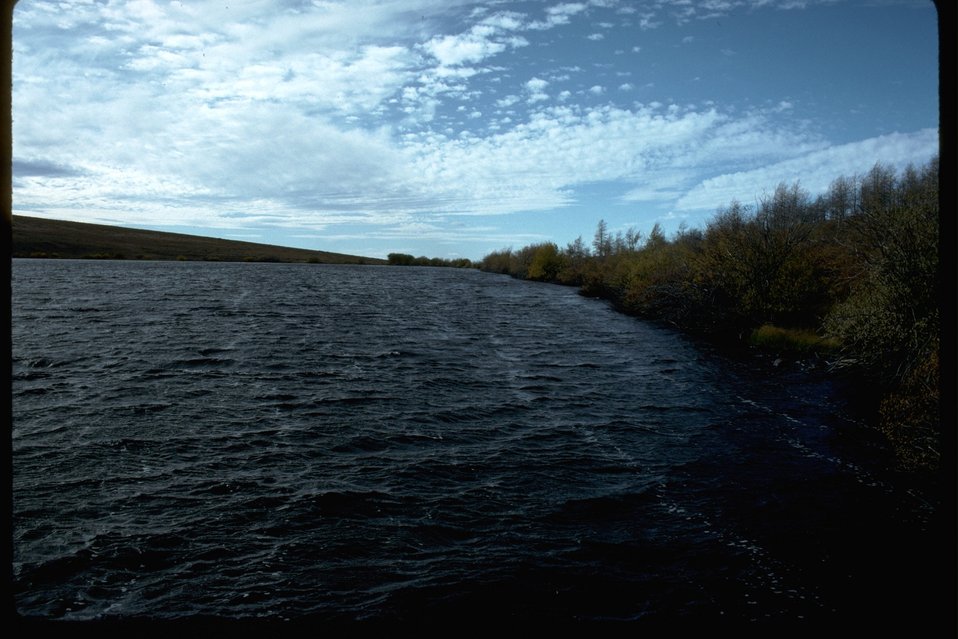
Wind blowing at Fish Lake.